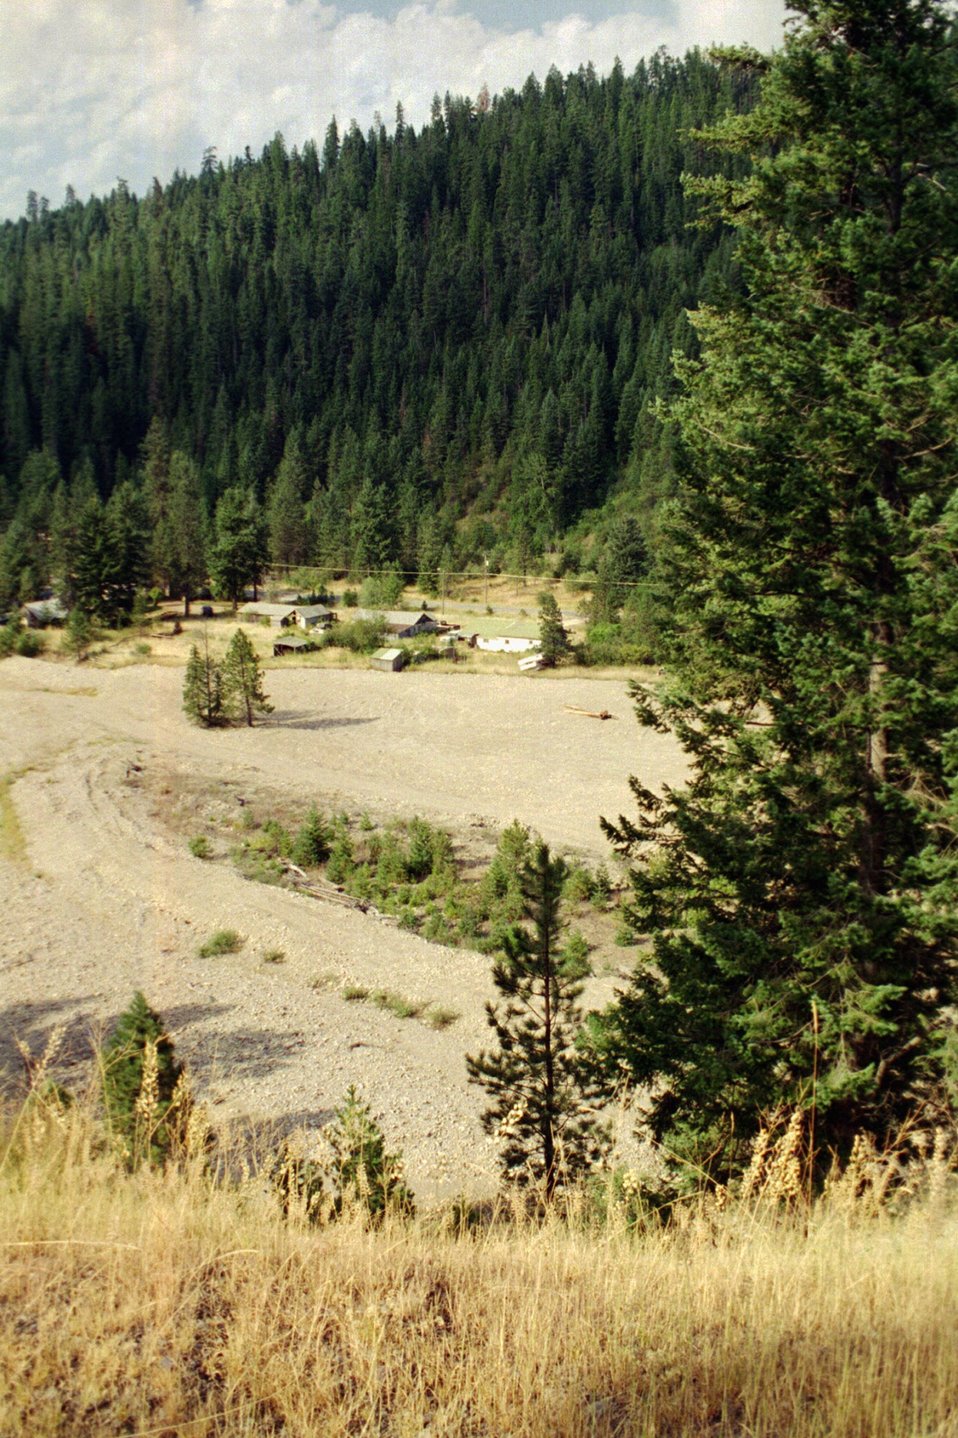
Riparian Area Stream Restoration from mining damage near Pinecreek Couer D'Alene Field Office UCSC Upper Columbia Salmon Clearwater District